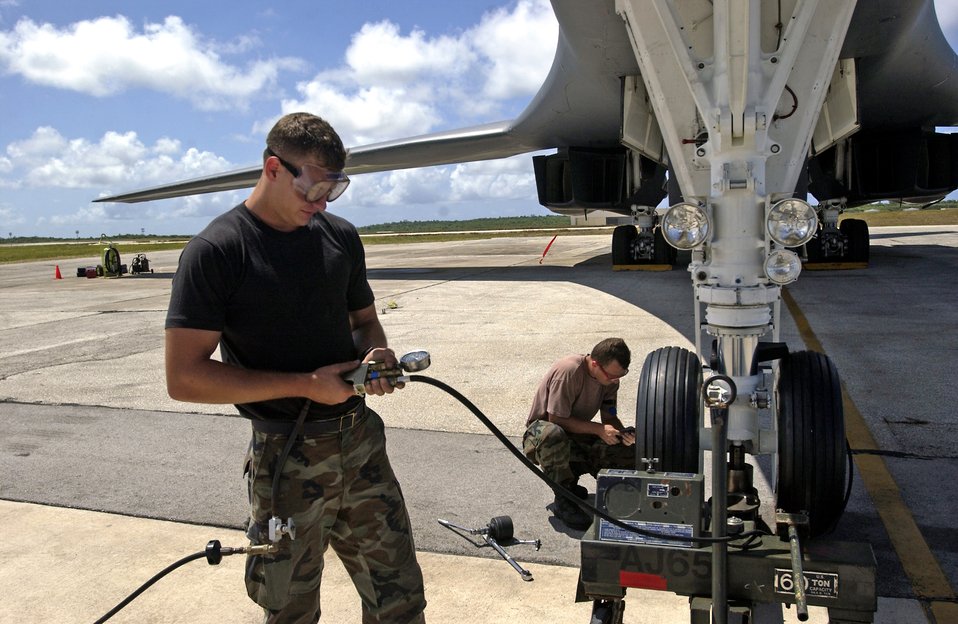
Presence in the Pacific

Senior Airman Alex Berger inflates a recently installed nose landing-gear tire on a B-1B Lancer while Senior Airman Thomas Feenstra prepares to replace the other one Monday, April 17, 2006, at Andersen Air Force Base, Guam. The Airmen are assigned to the 36th Expeditionary Aircraft Maintenance Squadron.